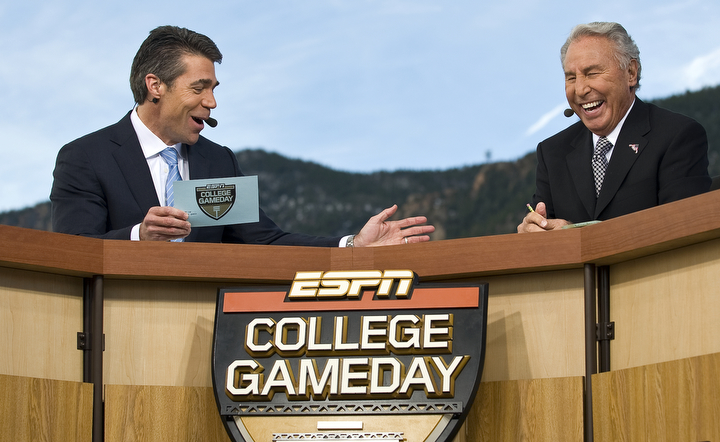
ESPN films 'College GameDay' from Academy

Chris Fowler (left) and Lee Corso, two of ESPN's